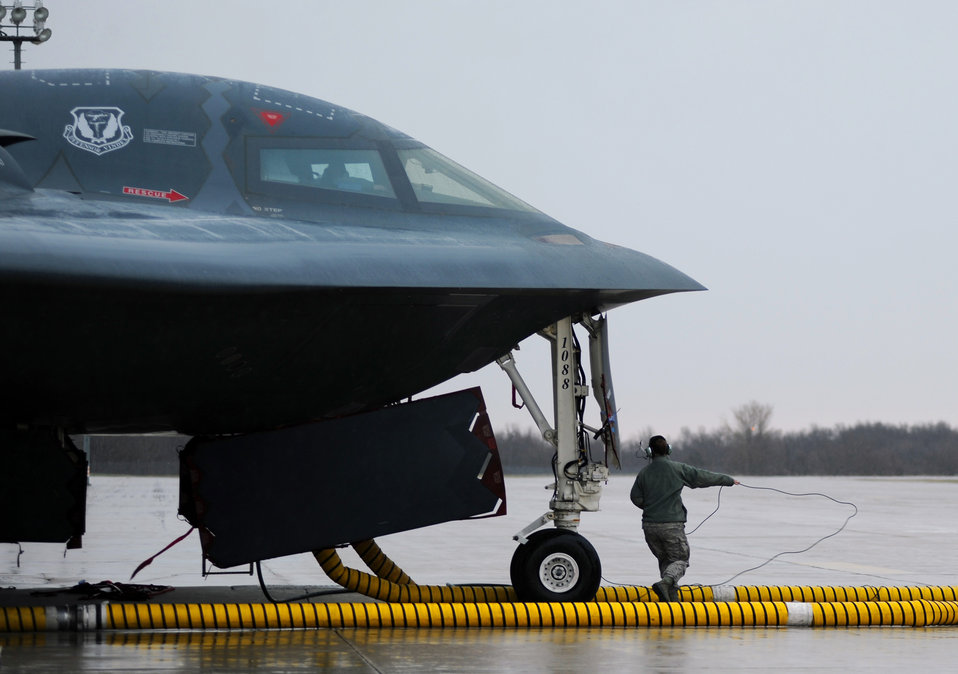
B-2 crews prepare for mission

Maintainers and crew chiefs from the 509th Aircraft Maintenance Squadron at Whiteman Air Force Base, Mo., prepare B-2 Spirits March 19, 2011, for Operation Odyssey Dawn.